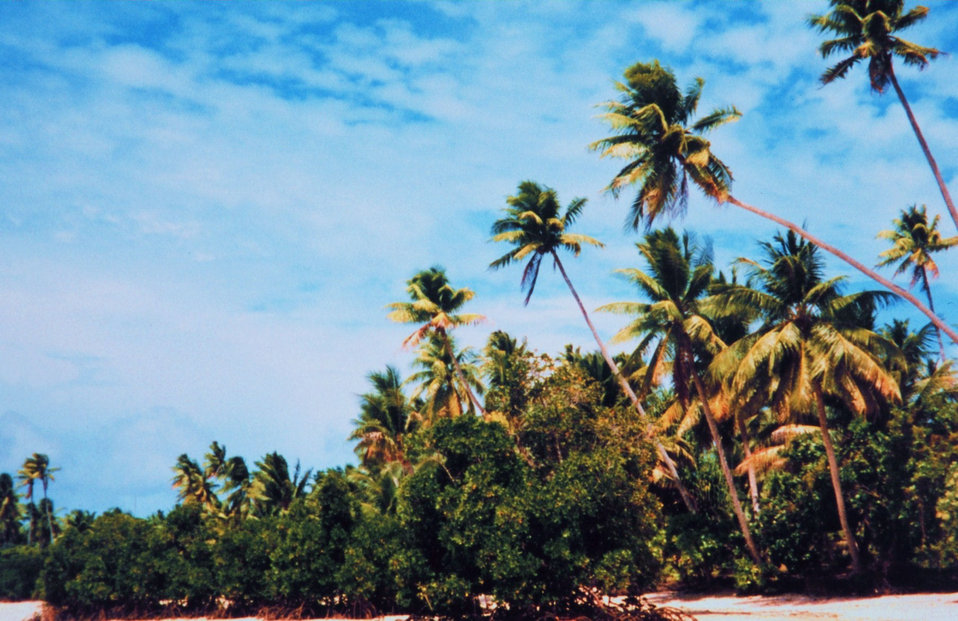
Mangroves colonizing sandy beach